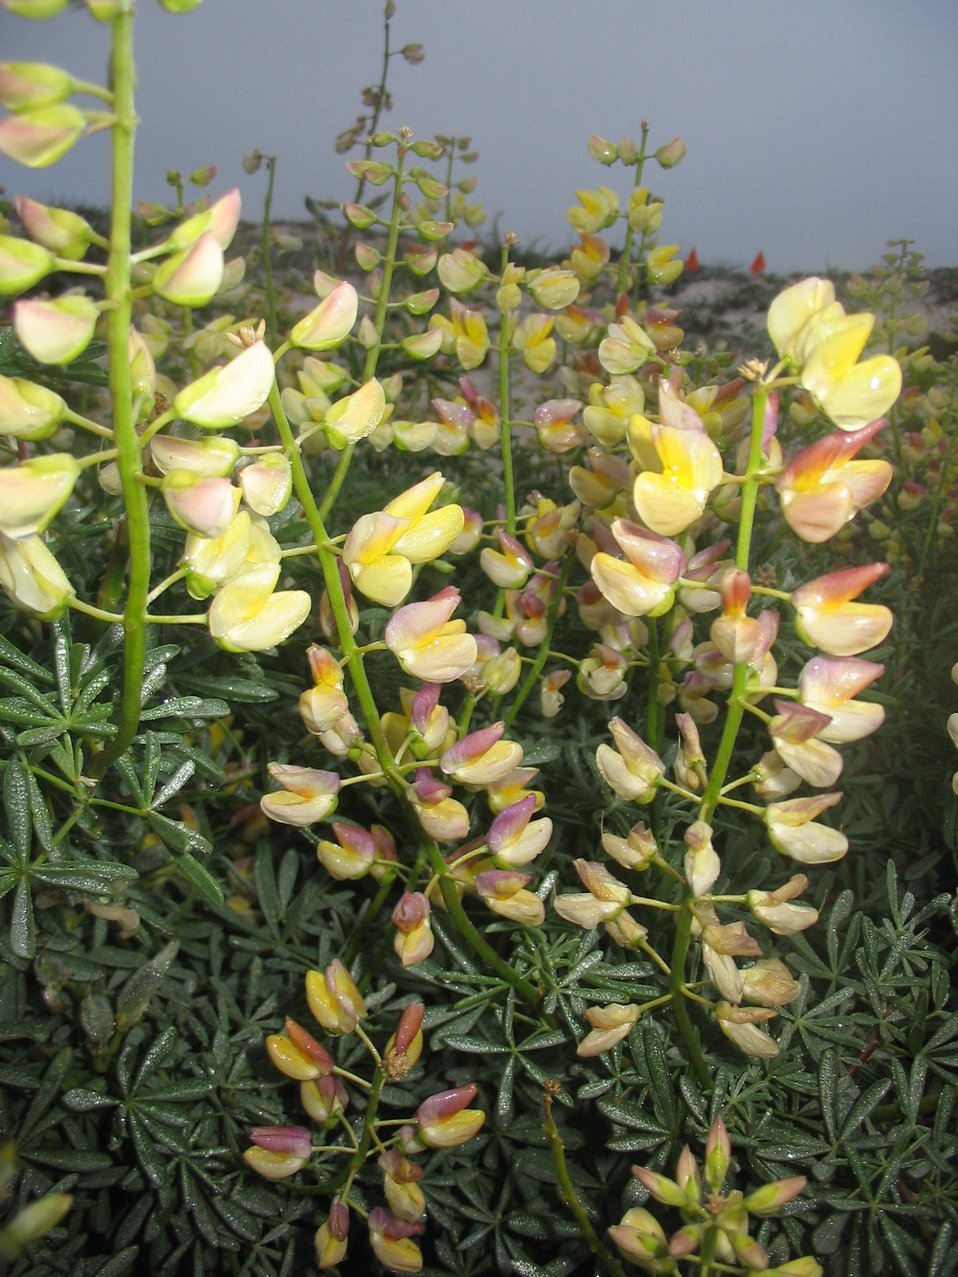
Tree lupine (Lupinus arboreus)